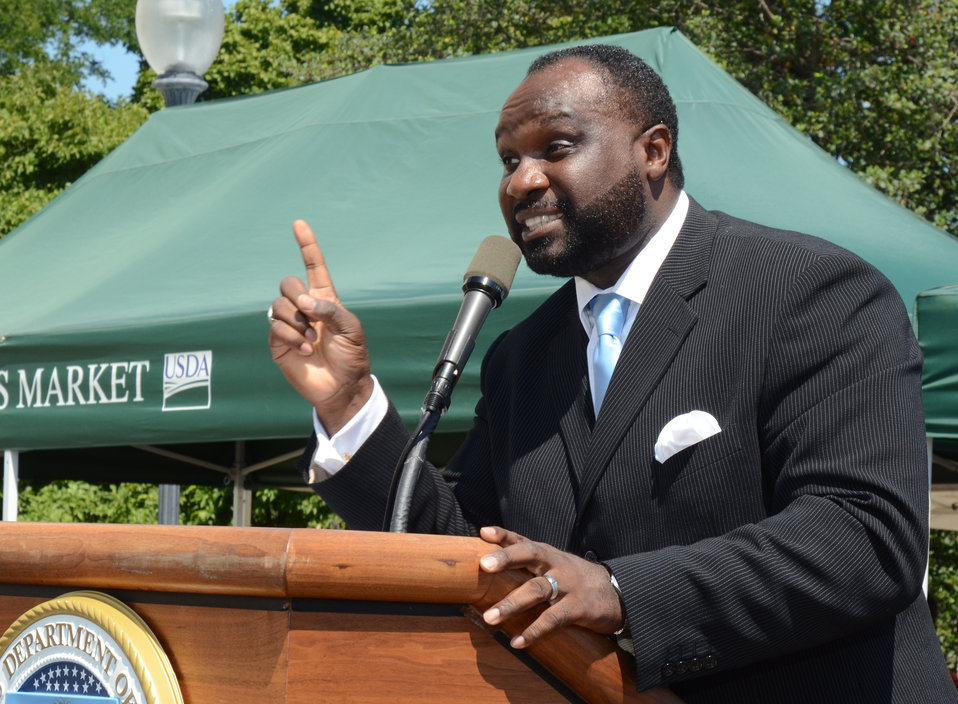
Duane Williams, Feds Feed Families Program Manger from U.S. Office of Personnel Management (OPM) speaking at the USDA kickoff event for Feds Feed Families at the U.S. Department of Agriculture Farmers Market in Washington, D.C., on Friday, June 8, 2012.